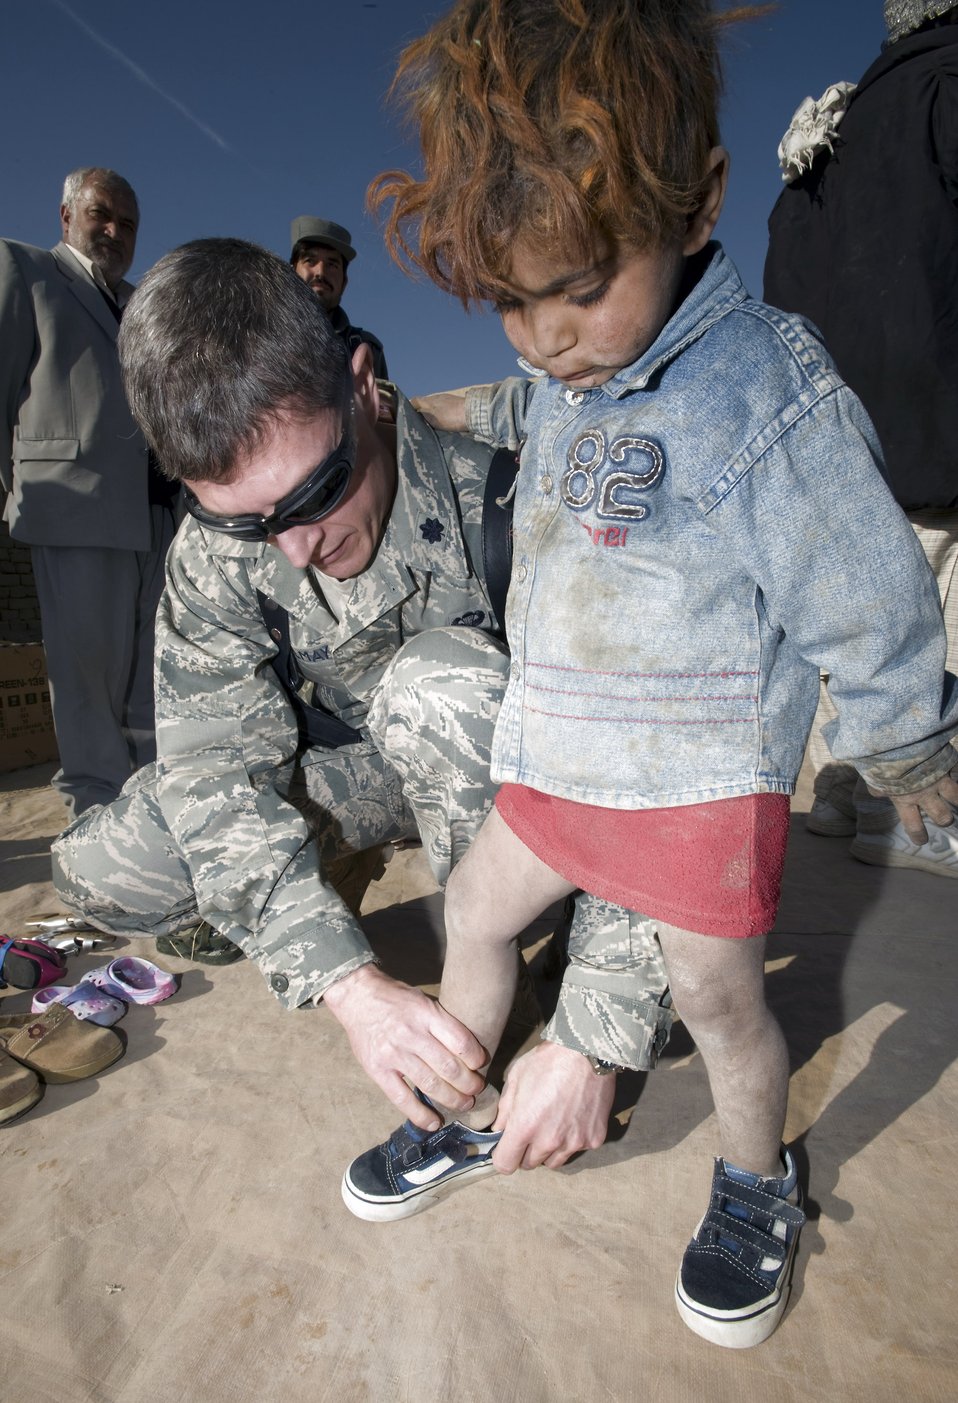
A good fit

Lt. Col. (Dr.) Thomas Knolmayer helps an Afghan girl try on shoes during a humanitarian assistance visit at Parwan Refugee Camp, Afghanistan. American citizens donated clothes, shoes, coats and blankets to the refugee camp through Operation Care.